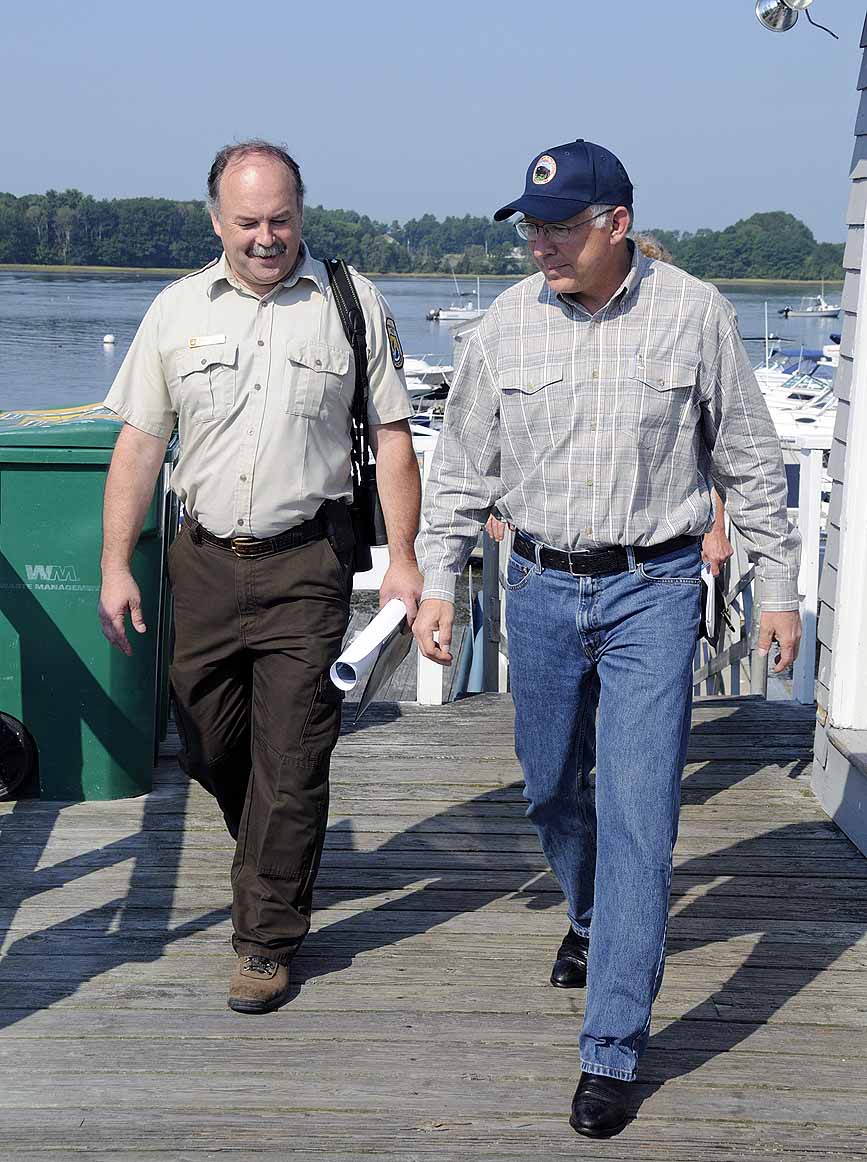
Secretary Salazar visit to Great Bay

Secretary of the Interior Ken Salazar (right) with Graham Taylor, Manager of the Great Bay National Wildlife Refuge.